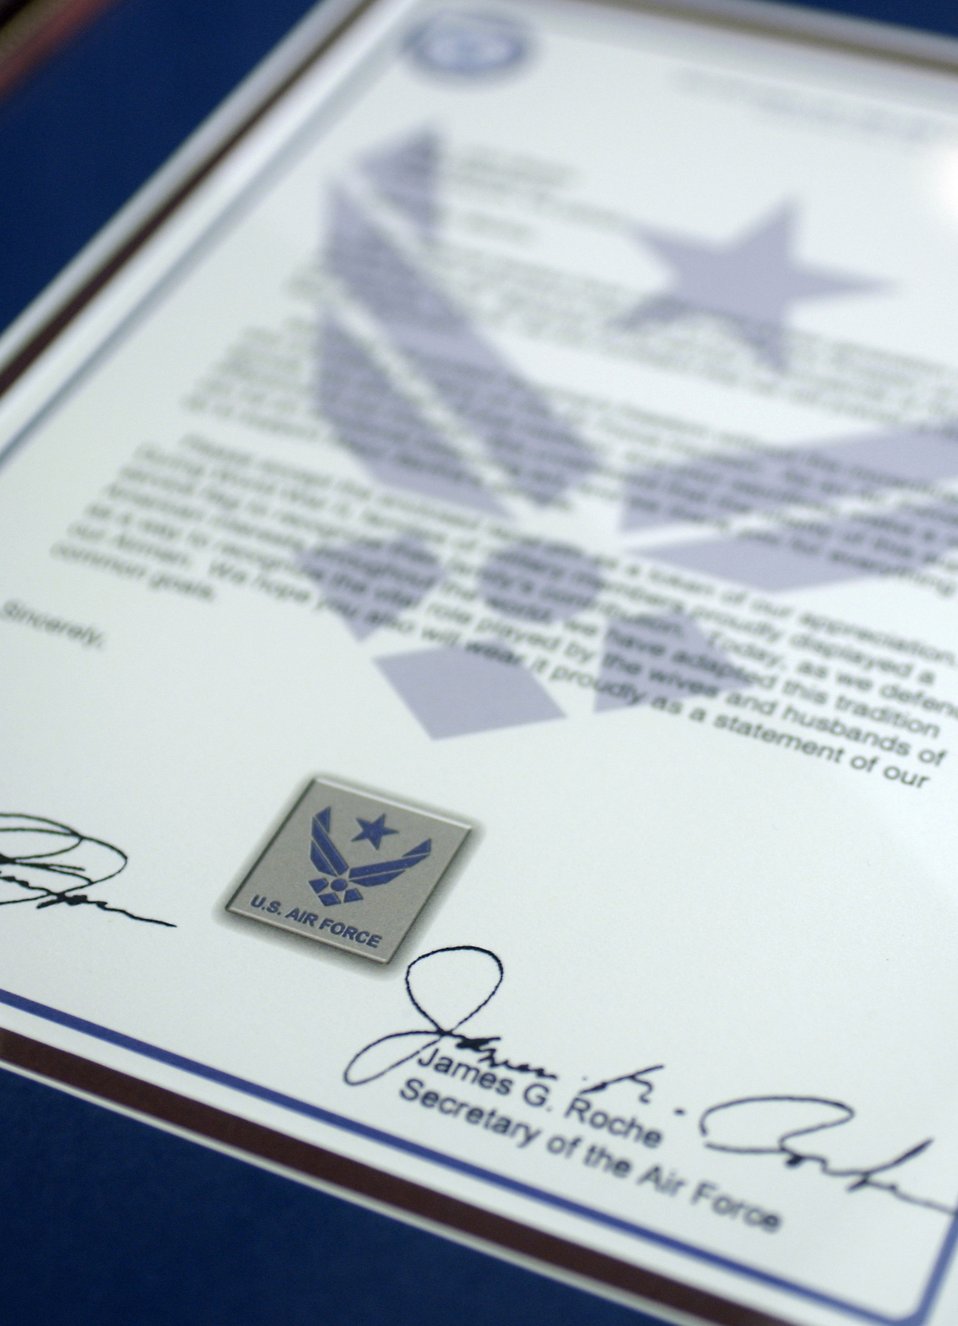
Air Force honors spouses with pin

WASHINGTON -- A letter signed by Secretary of the Air Force James G. Roche and Chief of Staff of the Air Force Gen. John P. Jumper accompanies each Air Force spouse pin. The pin is designed to recognize and thank spouses who support the efforts of Airmen stationed worldwide. The pin sports a blue star cradled in the Air Force symbol. It is a contemporary adaptation of a wartime tradition dating back to World War I where families hung service flags in their windows displaying a blue star for each family member serving in the armed forces. Undersecretary of the Air Force Peter B. Teets launched the spouse pin program during a ceremony at the Pentagon on Nov. 8.